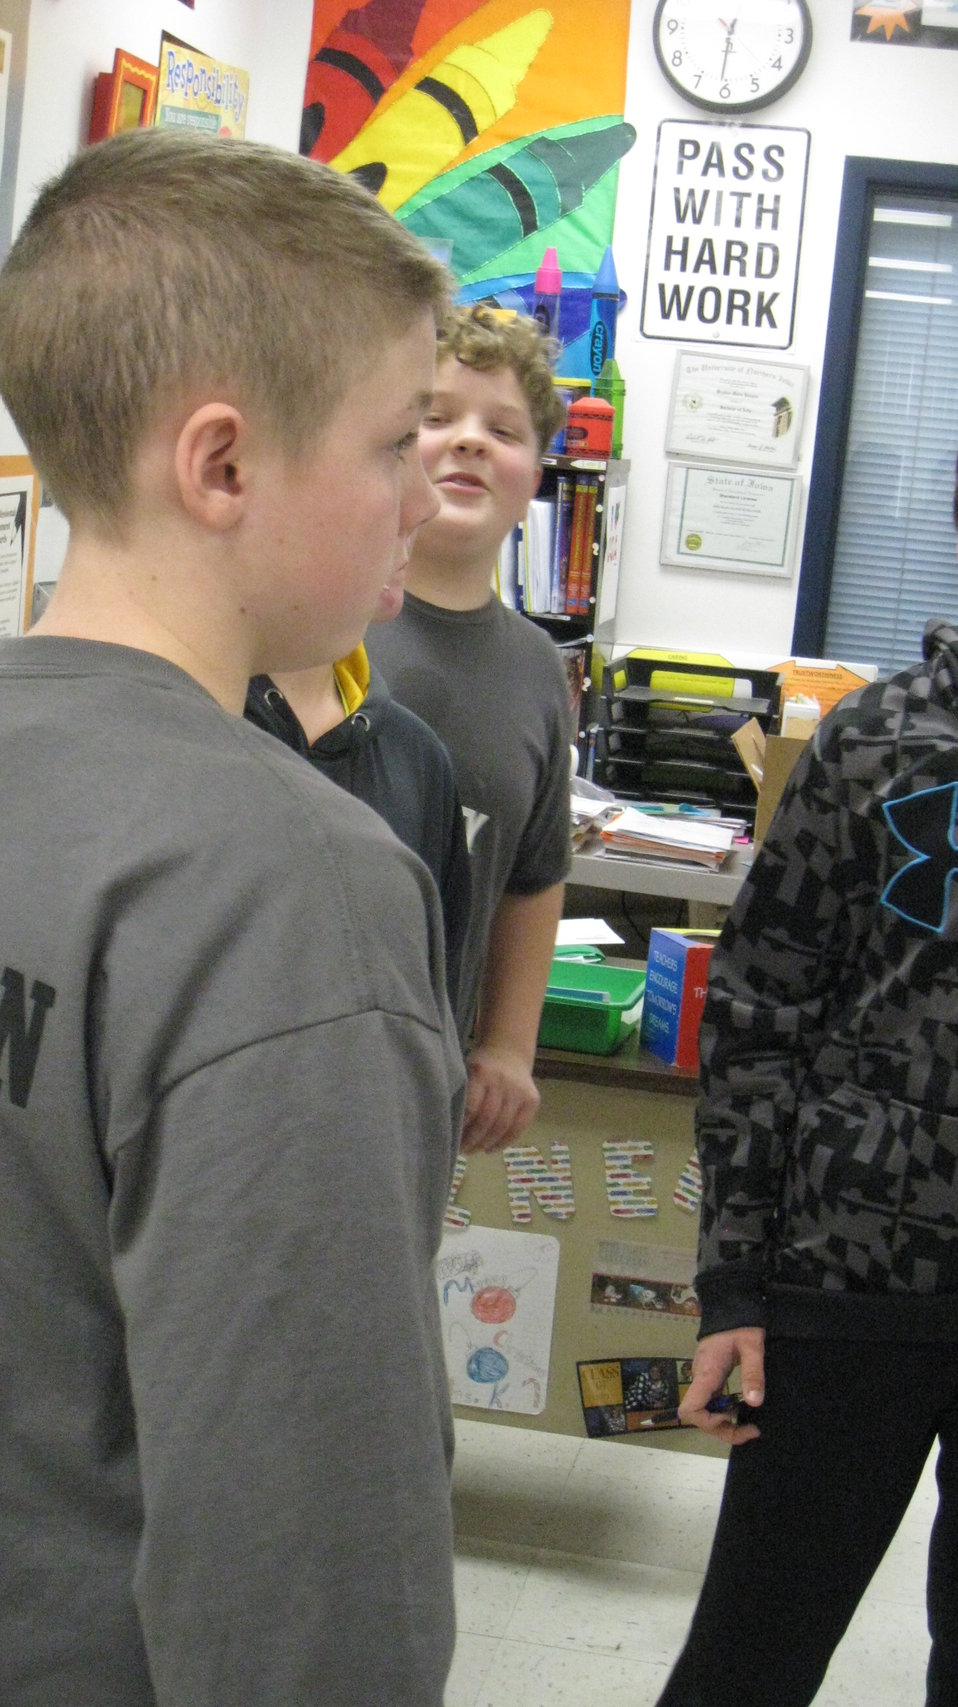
Kids Take a Stand

Teenagers from the Van Buren County SAFE Coalition's, Youth Leadership Council (YLC) in Keosauqua, Iowa participate in various events during National Drug Facts Week, 2014.